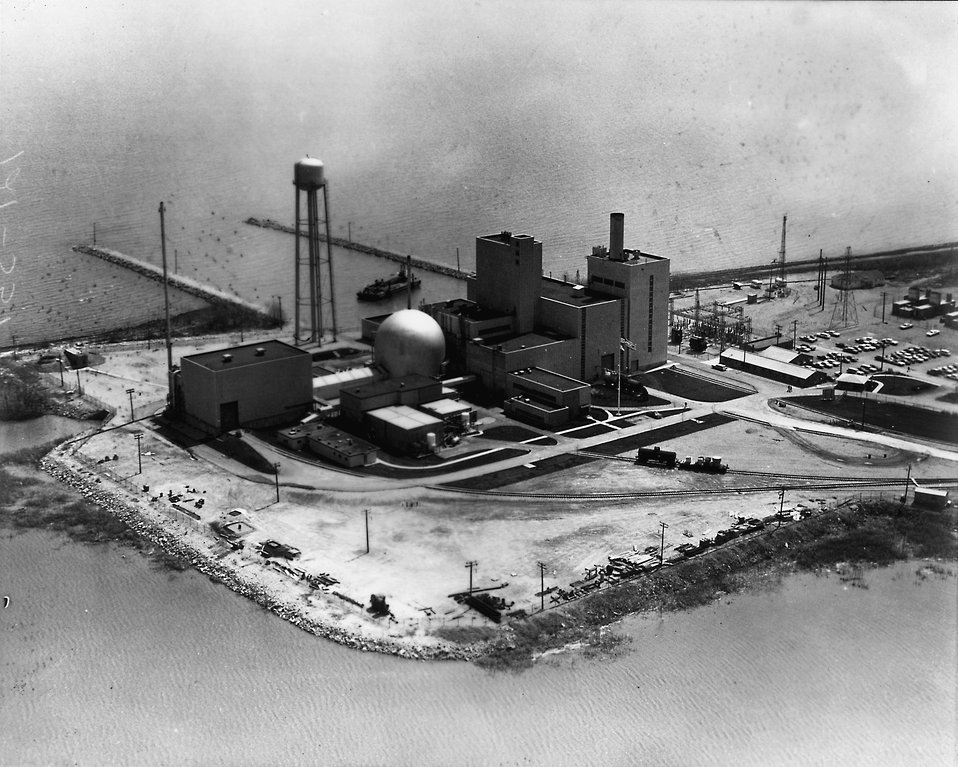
Enrico Fermi Atomic Power Plant, located at Lagoona Beach on Lake Erie, near Monroe, Michigan, about 35 miles southwest of Detroit. The 60,900 KWE plant incorporates a fast breeder reactor. Circa 1972.